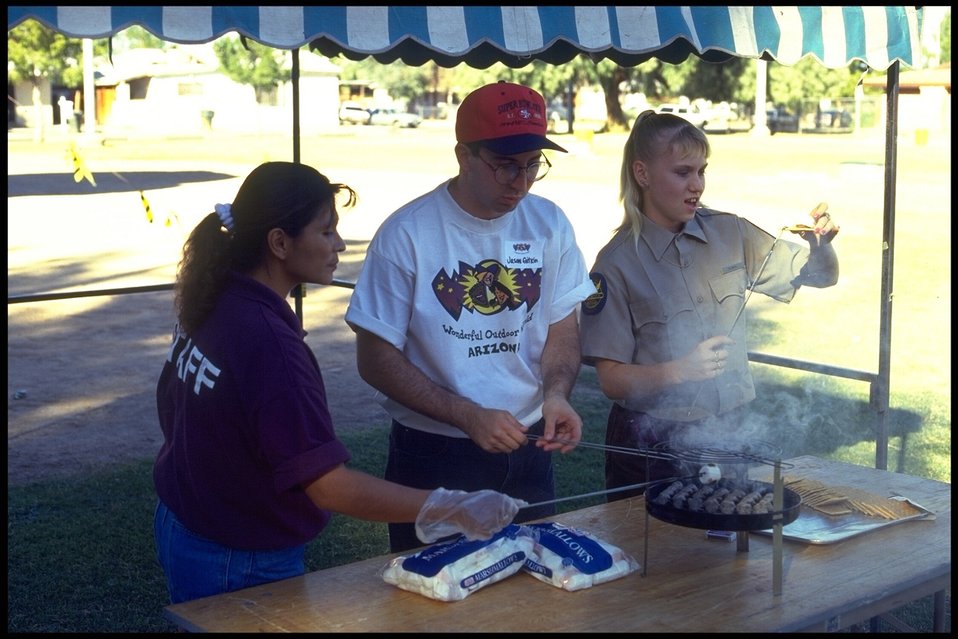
Volunteers at WOW (Wonderful Outdoor World) cook up some food for the kids participating in the program.